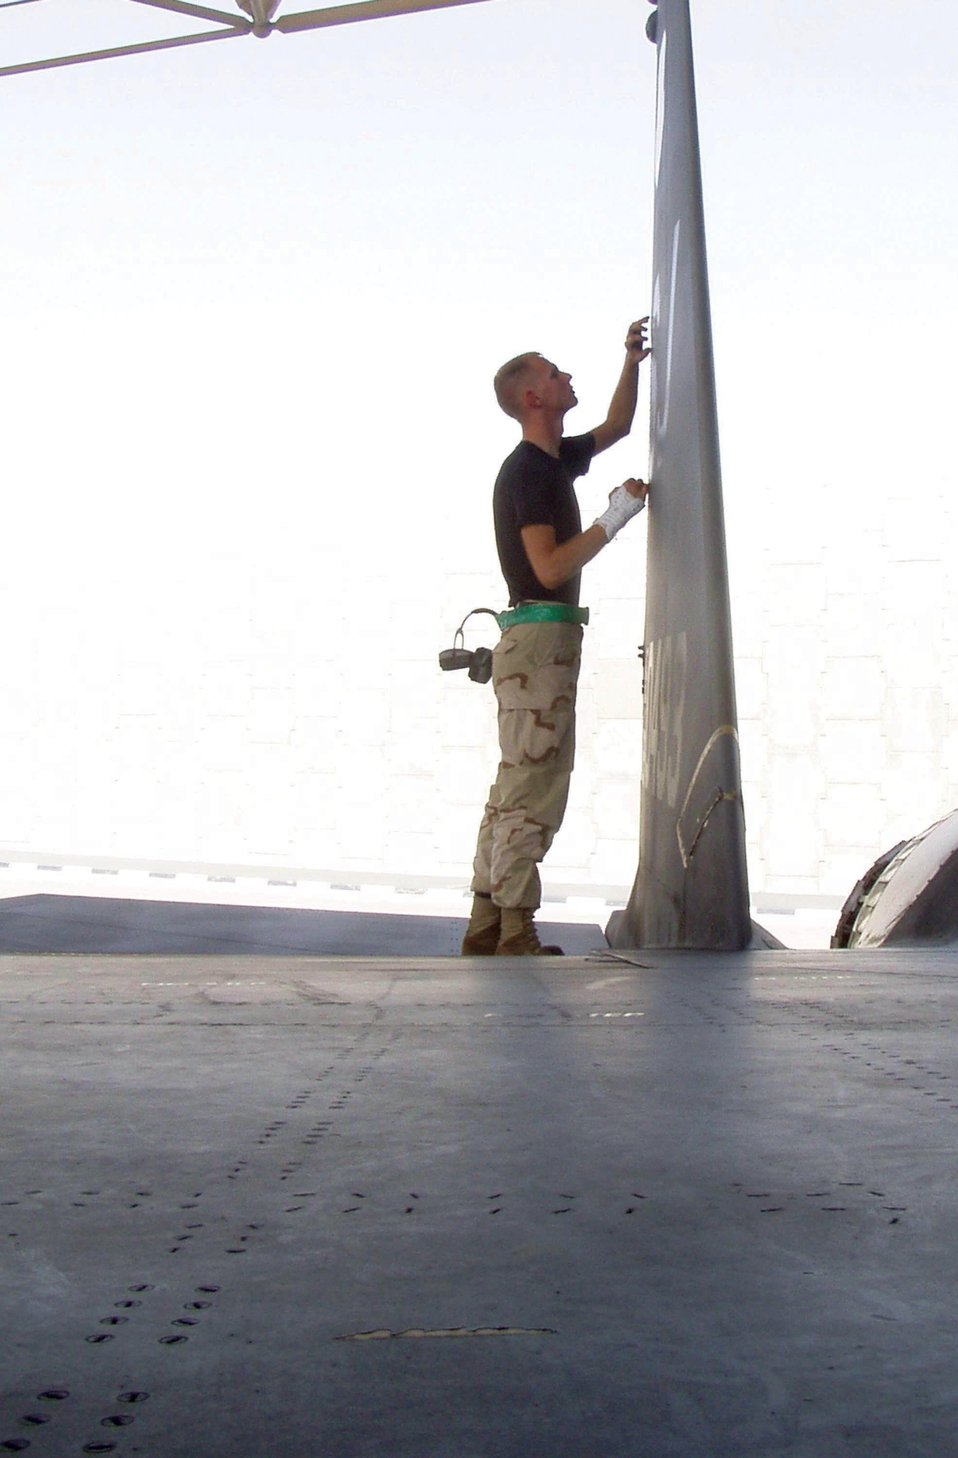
Check it out

SOUTHWEST ASIA -- Senior Airman Jeramia Ostuni completes a wear and damage check on the rudder of a 335th Expeditionary Fighter Squadron F-15E Strike Eagle at a forward-deployed location. He is a crew chief deployed from the 4th Aircraft Maintenance Squadron at Seymour Johnson Air Force Base, N.C.